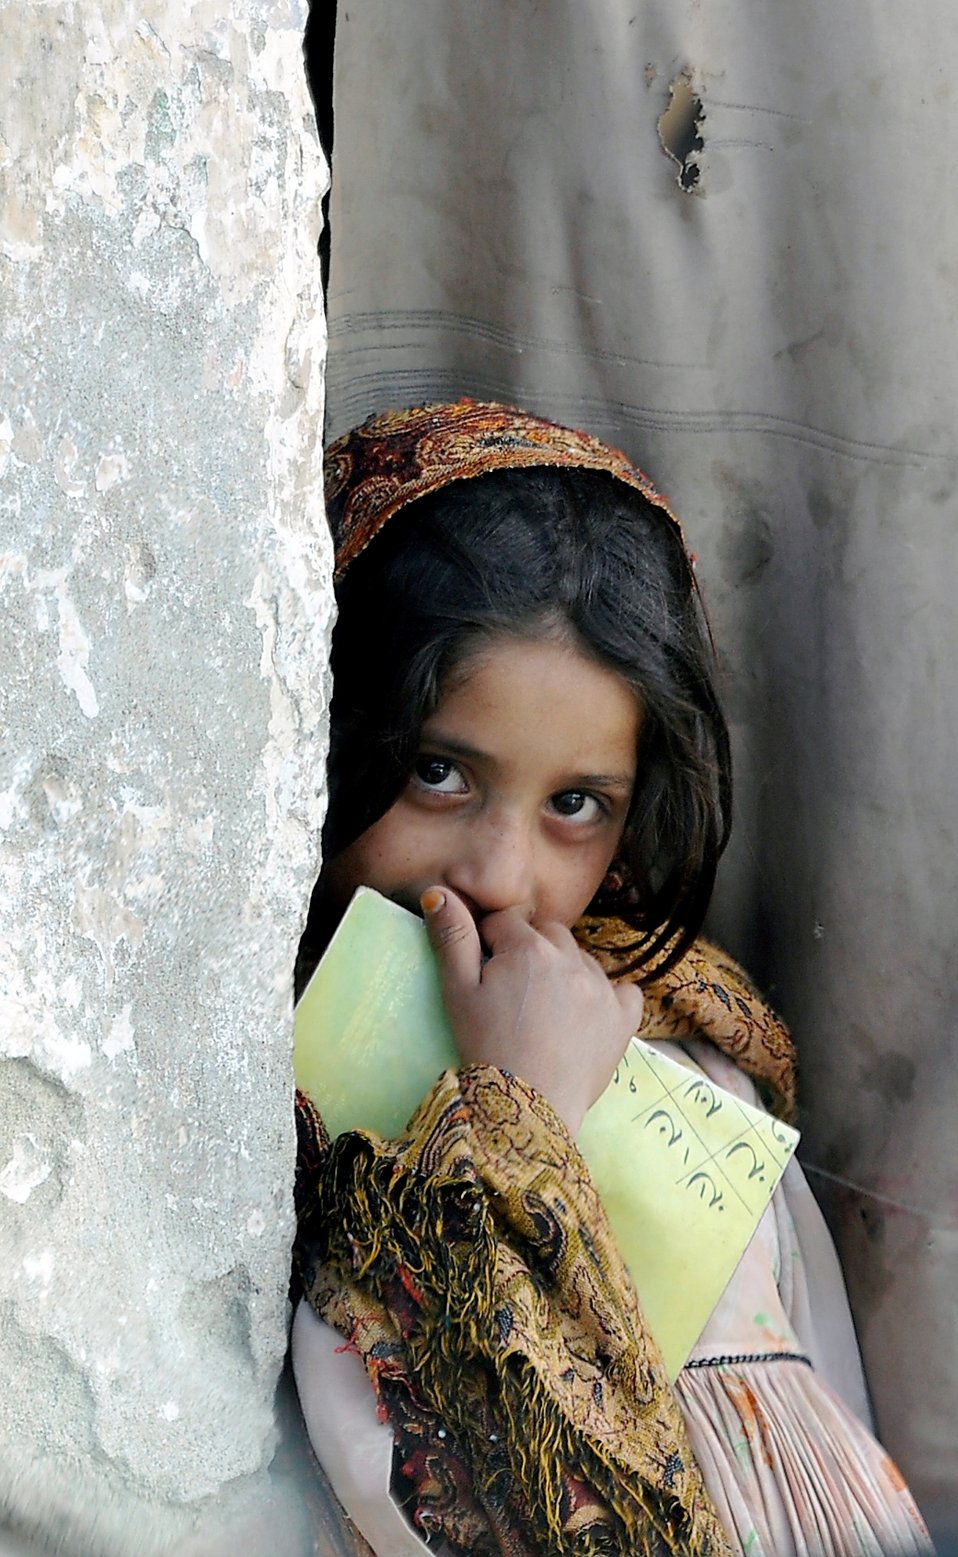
Reading 06